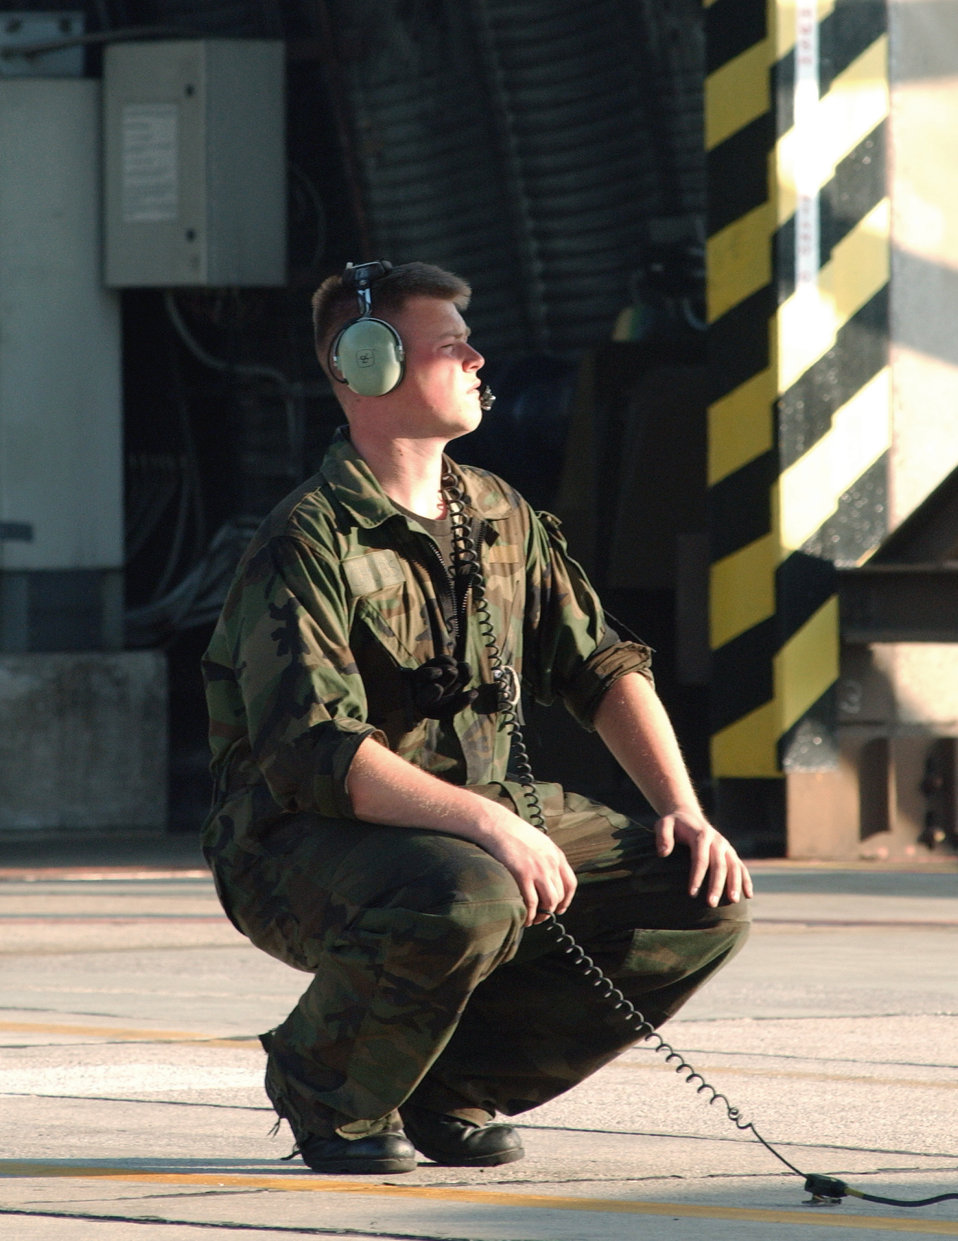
Calling all hogs

SPANGDAHLEM AIR BASE, Germany -- Airman First Class Michael Rushing communicates with the pilot of an A-10 Thunderbolt II to ensure that all checks of the outer and inner operational functions of the aircraft have been completed before taking off here April 26. Airman Rushing is a crew chief assigned to the 52nd Aircraft Maintenance Squadron.